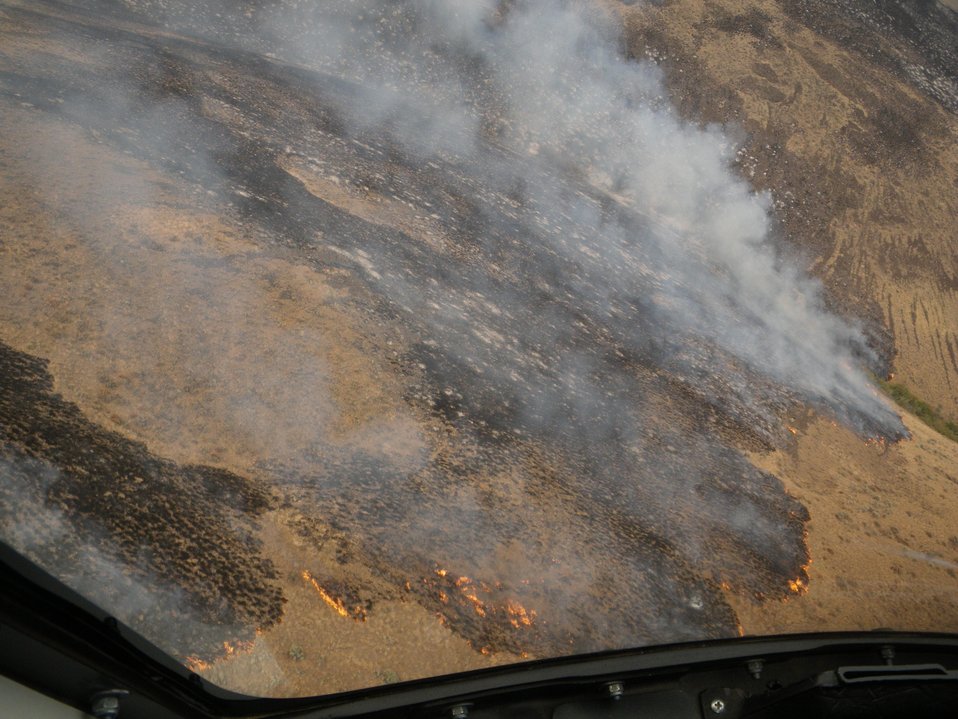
The Colockum Tarps Fire southwest of Malaga, WA began on Jul. 27, 2013 is under investigation. The fire has consumed approximately 70,000 acres and is approximately 25% contained.